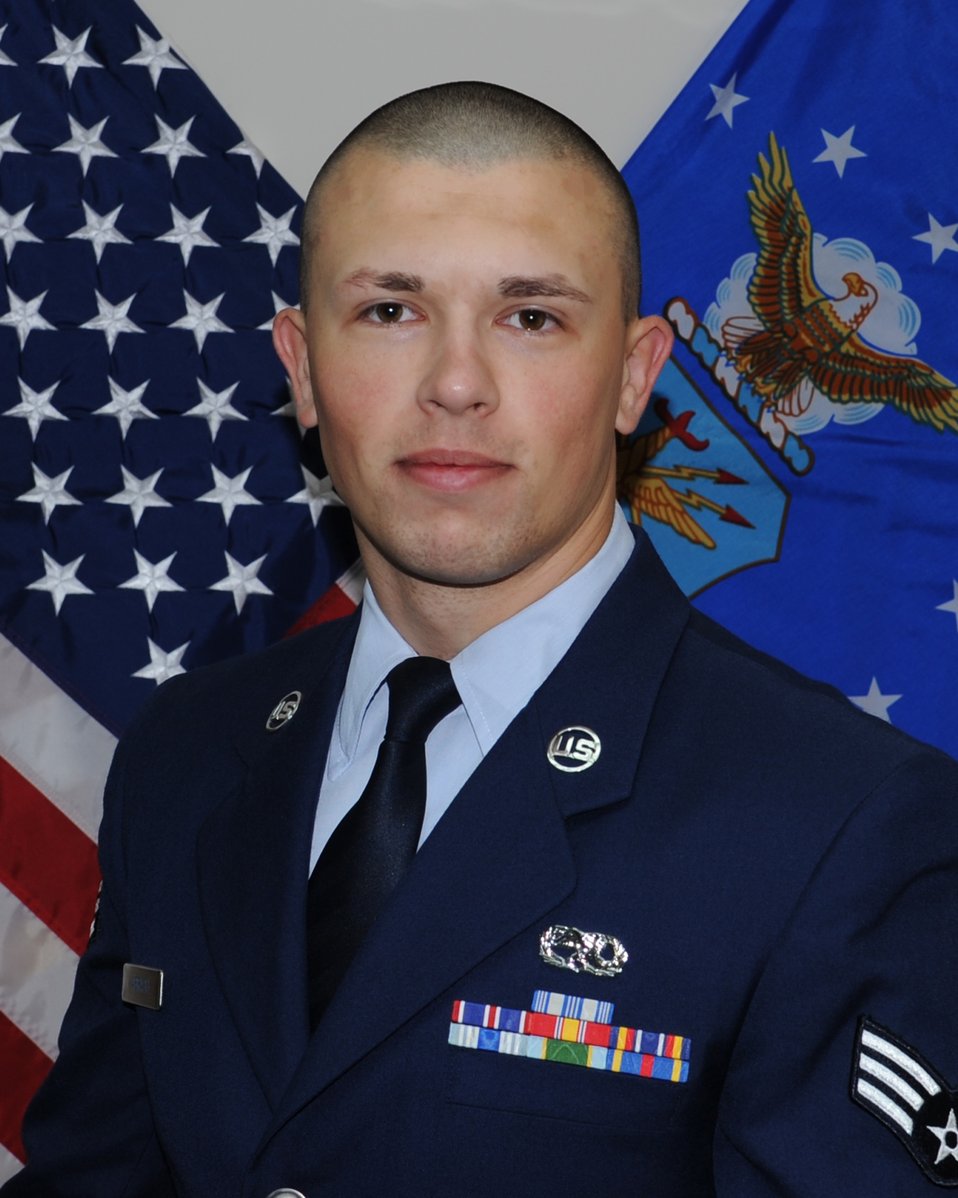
Air Force Language Professional of the Year for 2011

Senior Airman Michael Abrash was recently selected as the Air Force Language Professional of the Year for 2011. Although Abrash earned this linguistic honor, he joined the Air Force in a completely different role: a jet engine mechanic.